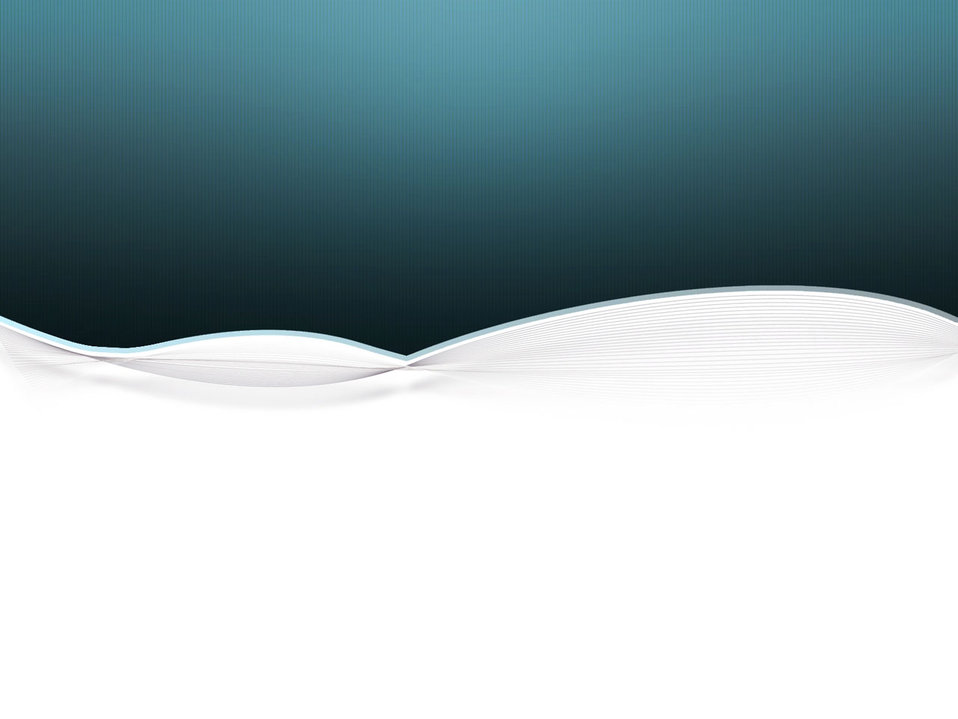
Experimental wireframe abstract.